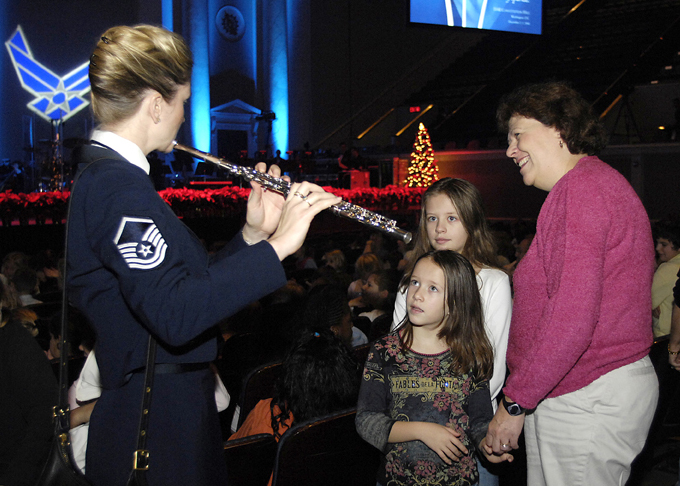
Children tune in Air Force

Master Sgt. Stacy Ascione, United States Air Force Band principle flutist, performs during a holiday concert at the Daughters of American Revolution Constitution Hall in Washington Dec. 1, 2006. The Air Force Band to include Max Impact, The Air Force Symphony Orchestra and members of the Airman of Note performed for the first time at a holiday concert for students in the local area.